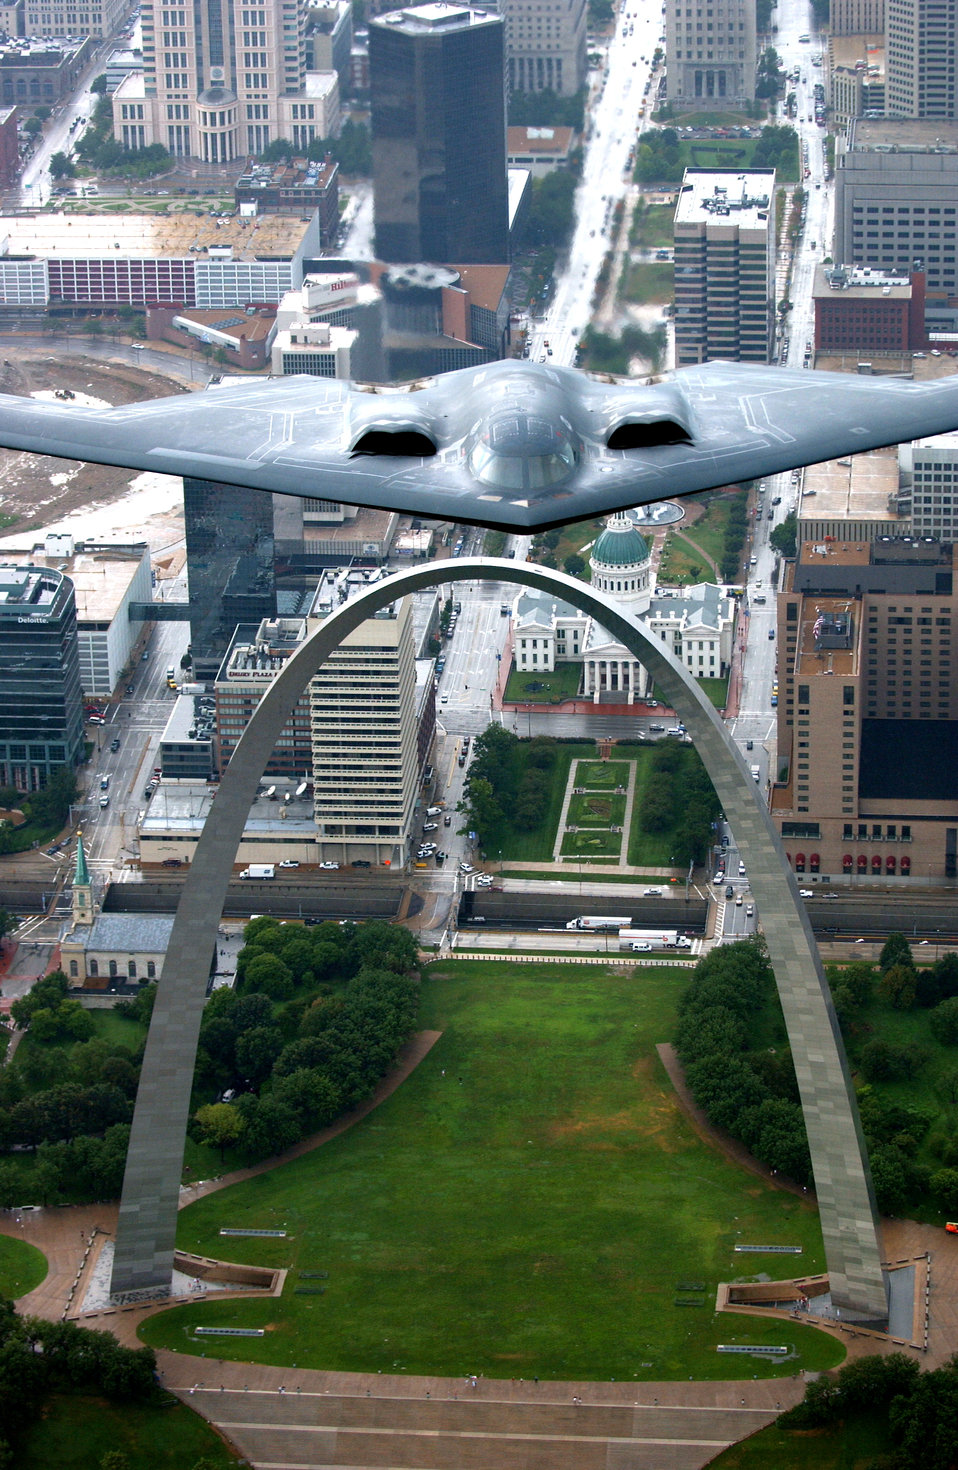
B-2 Spirit flies over St. Louis

A B-2 Stealth bomber from the 509th Bomb Wing at Whiteman Air Force Base, Mo., flies over the St. Louis Arch on Aug. 10. The B-2 flyover was one of several events celebrating Air Force Week in St. Louis.